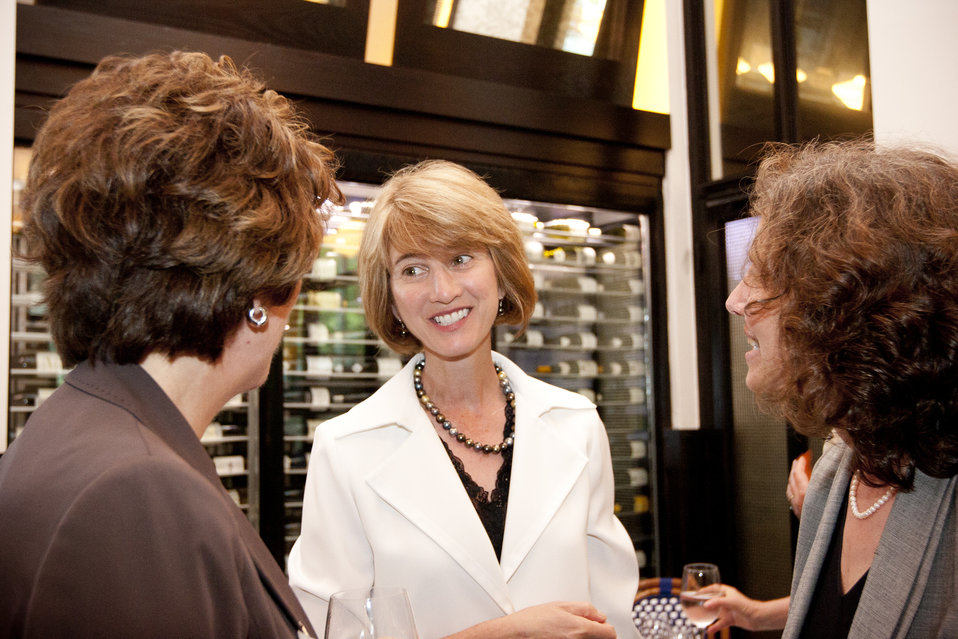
WomenandEnergy 11